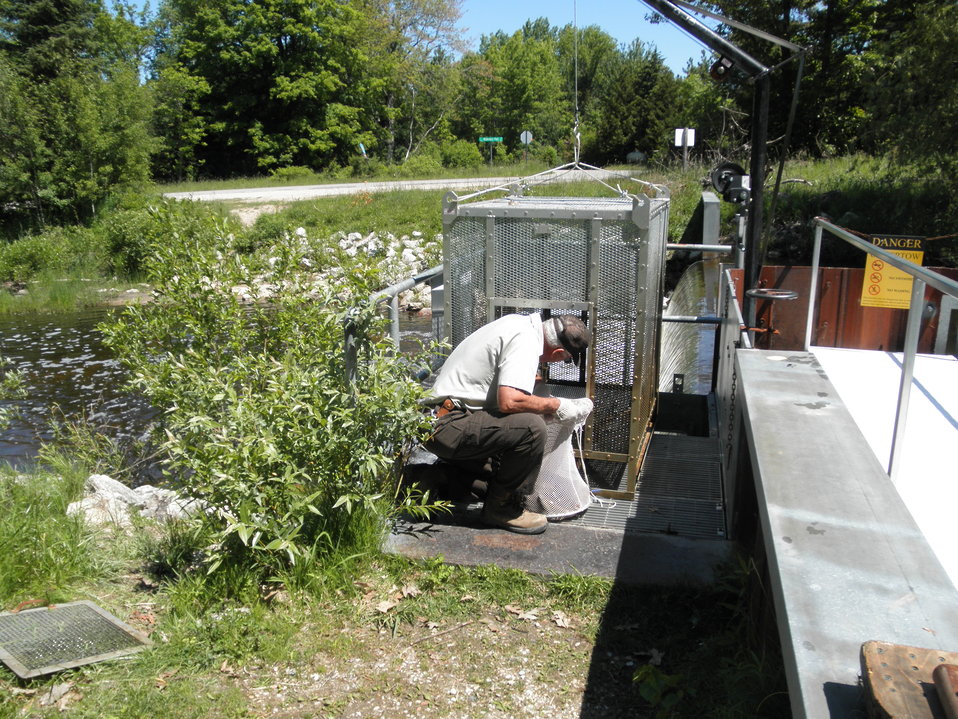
Service Employee checking a trap at an outlet of Carp Lake, Michigan.